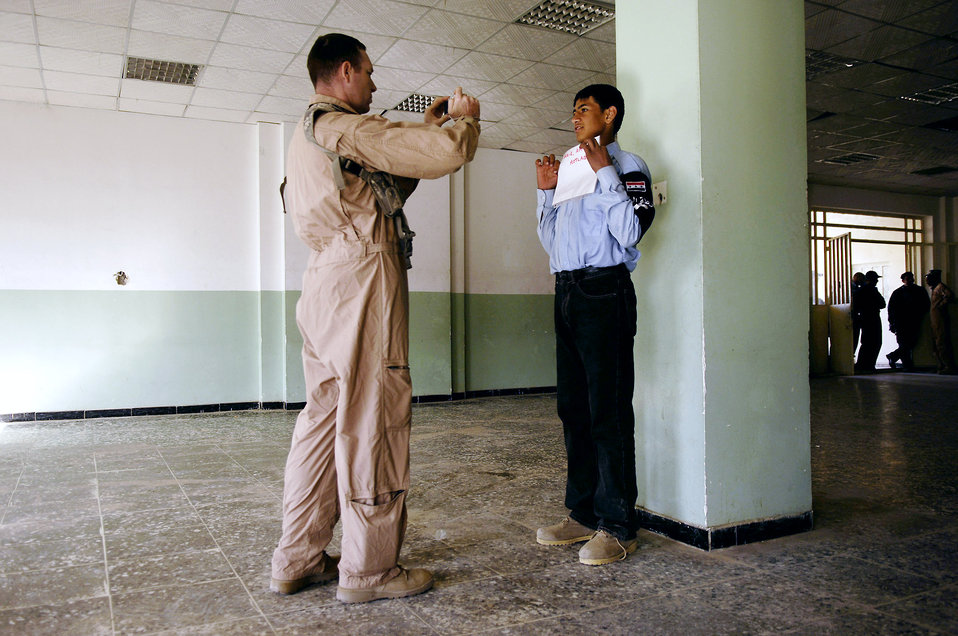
Airmen improve Iraq's security

Tech. Sgt. Justin Duncan photographs an Iraqi police officer to be entered into a database Feb. 23 at Rasheed, Iraq. Sergeant Duncan is assigned to Det. 3, 732nd Expeditionary Security Forces Squadron from Sather Air Base, Iraq, and is deployed from the 341st Security Forces Squadron at Malmstrom Air Force Base, Mont.